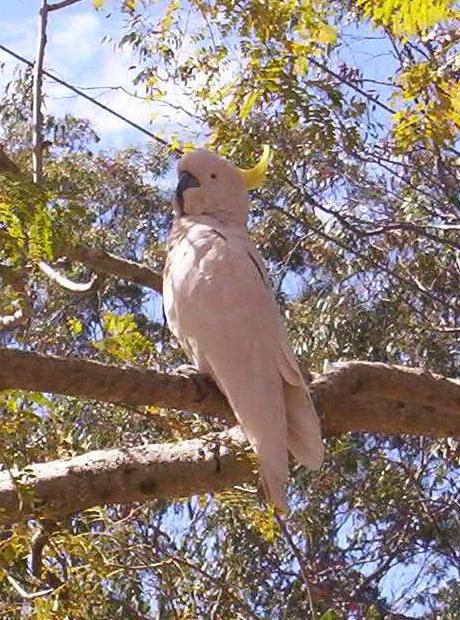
Cacatua galerita Sulphur-crested Cockatoo. This photo was taken in August, 2007 at Mount Nebo in Queensland, Australia